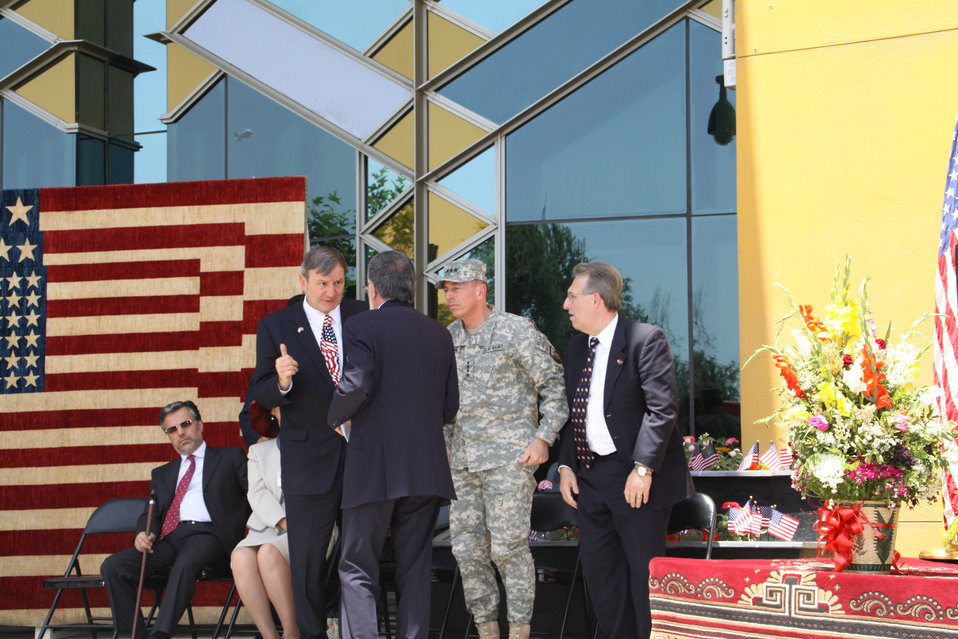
Kabul Official July 4th Celebration